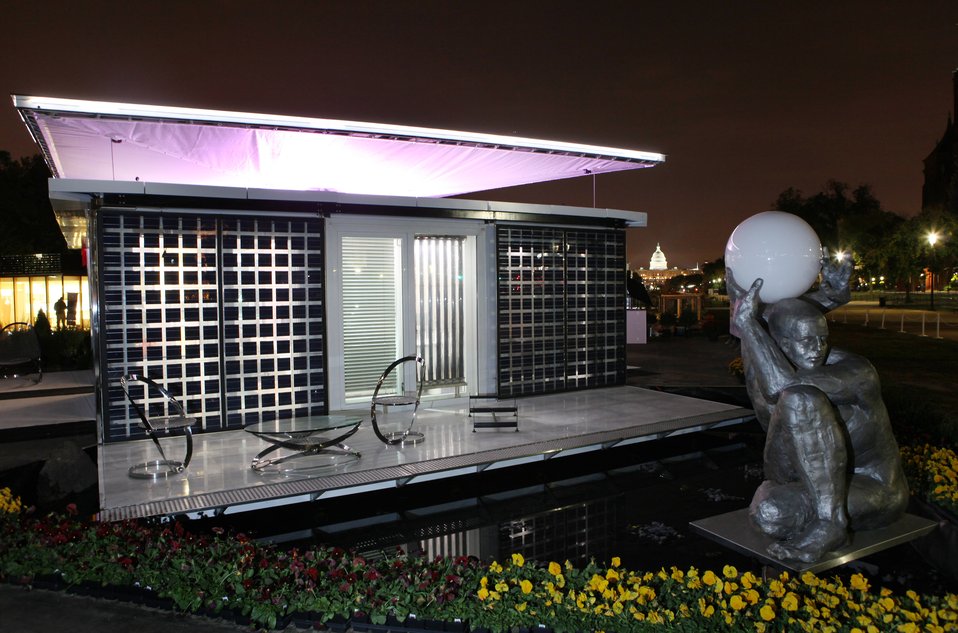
Team Spain's solar-powered house glows at night during the lighting design contest at the U.S. Department of Energy Solar Decathlon on the National Mall Washington, DC, October 12, 2009.

The U.S. Department of Energy Solar Decathlon, features energy-efficient, solar-powered houses built by 20 university teams from North American and Europe.